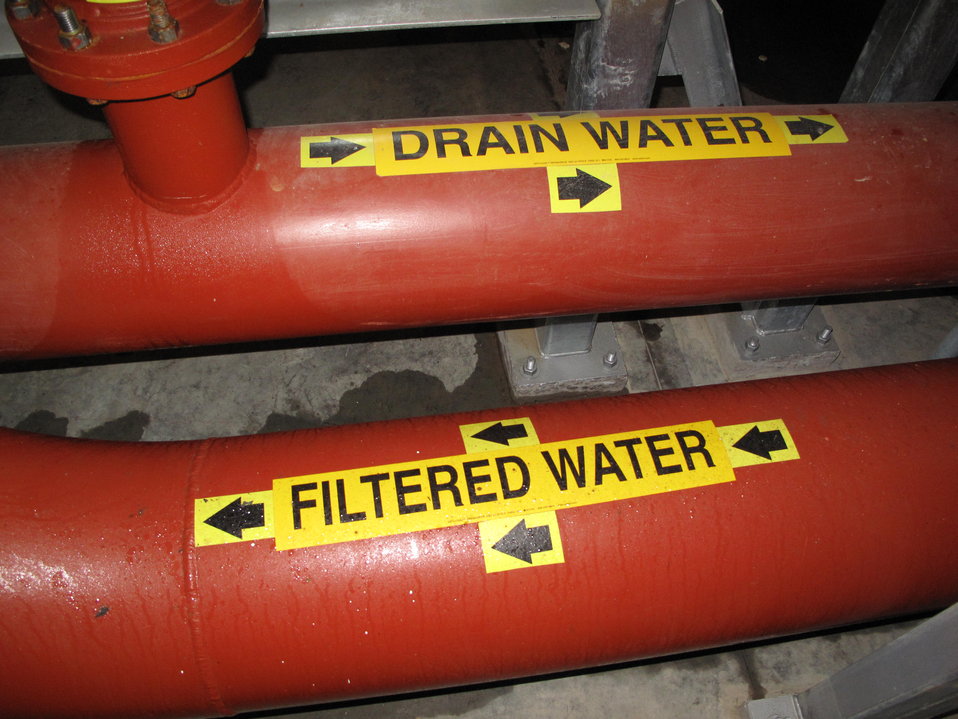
Leadville National Fish Hatchery

Filtered water is separated from waste water.